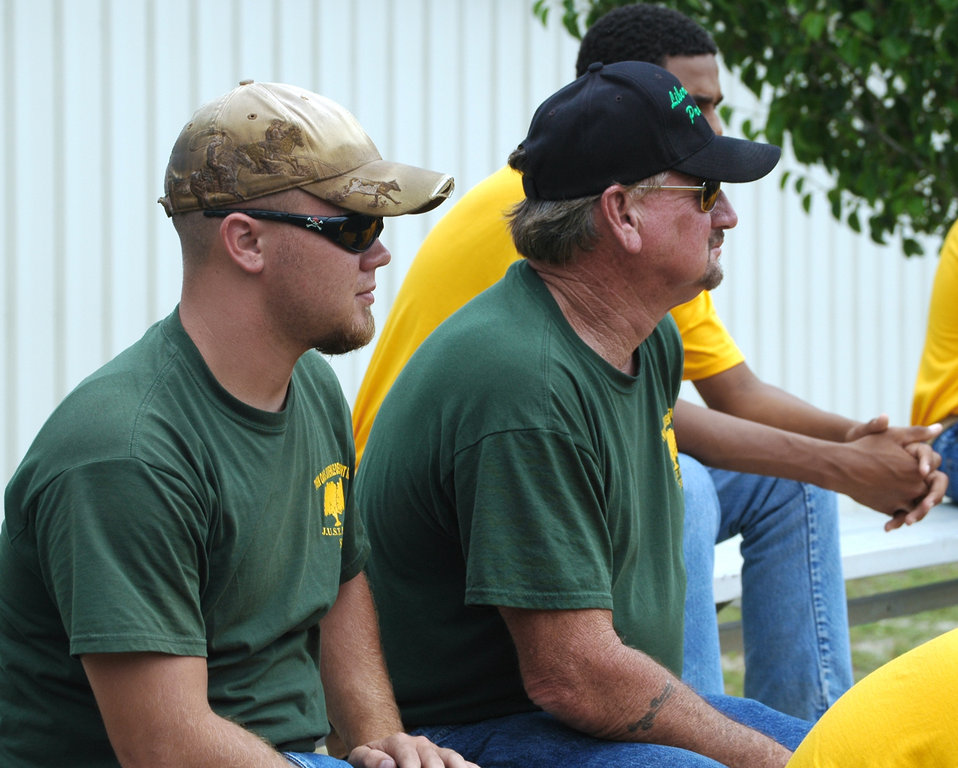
Airmen help Florida youth see inner potential

Ray Lasseter (left) and Ernest Rayley watch as members of the 325th Security Forces Squadron K-9 unit showcase one of the military working dog's skills May 5 at Tyndall Air Force Base, Fla. The two men escorted a group of 10 teenagers involved with their program who were chosen to tour the base due to their consistent good behavior through the boys' rehabilitation. Mr. Lasseter and Mr. Rayley are Liberty Juvenile Unit for Specialized Treatment team leaders.